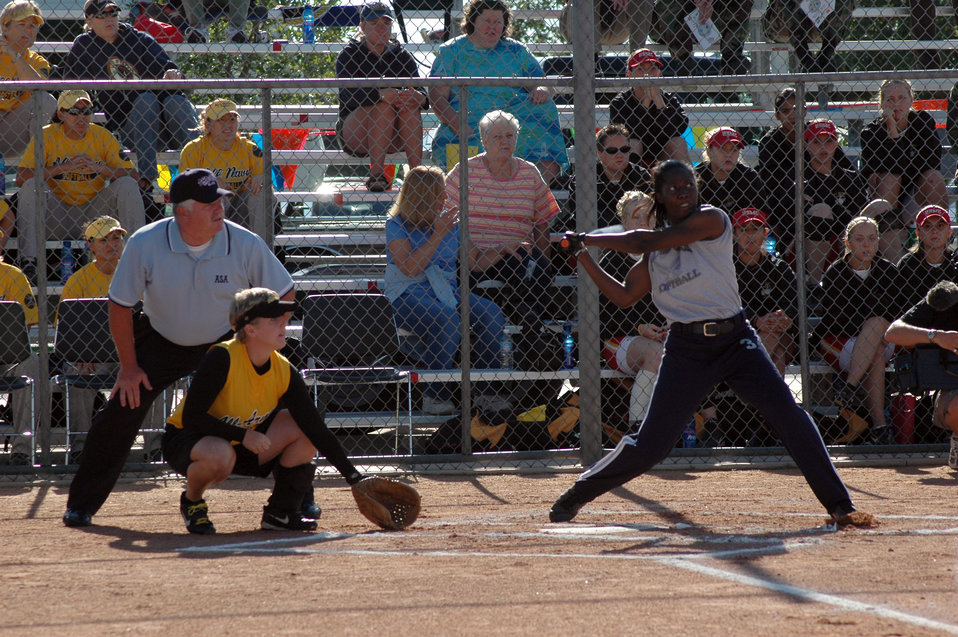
AF wins armed forces softball title

PETERSON AIR FORCE BASE, Colo. -- Left fielder Schameka White gets ready to rip a line drive down the third base line in the first game of the interservice championship series against Army on Aug. 24. White went 3-5 in the first game that Air Force lost 16-14, but came back to win 20-15 in the championship game Aug. 26.